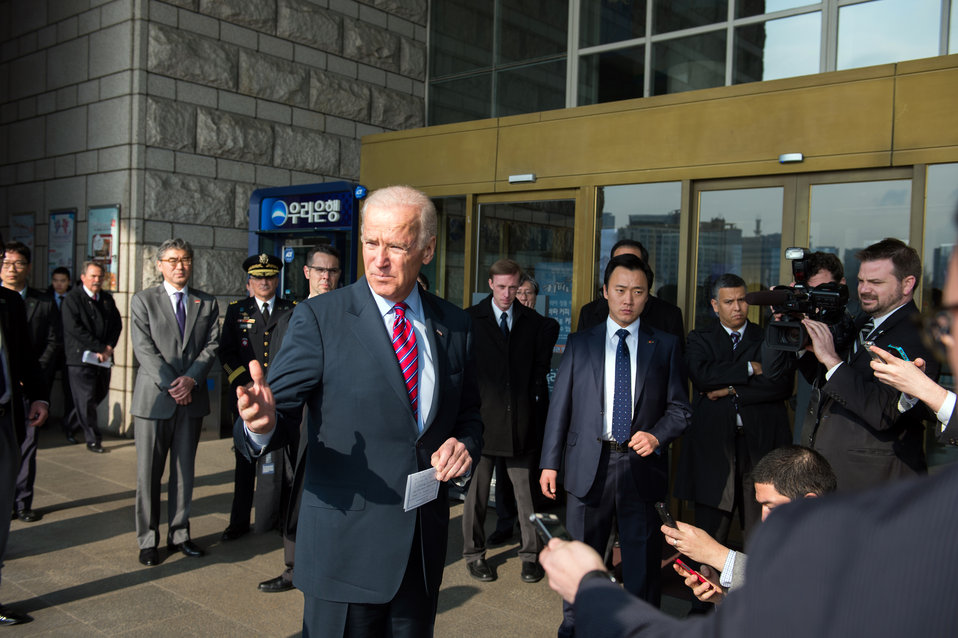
Vice President Biden Addresses Reporters at the War Memorial of Korea

Vice President Joseph Biden speaks to the media after a wreath-laying ceremony at the War Memorial of Korea in Seoul, South Korea, on December 7, 2013.